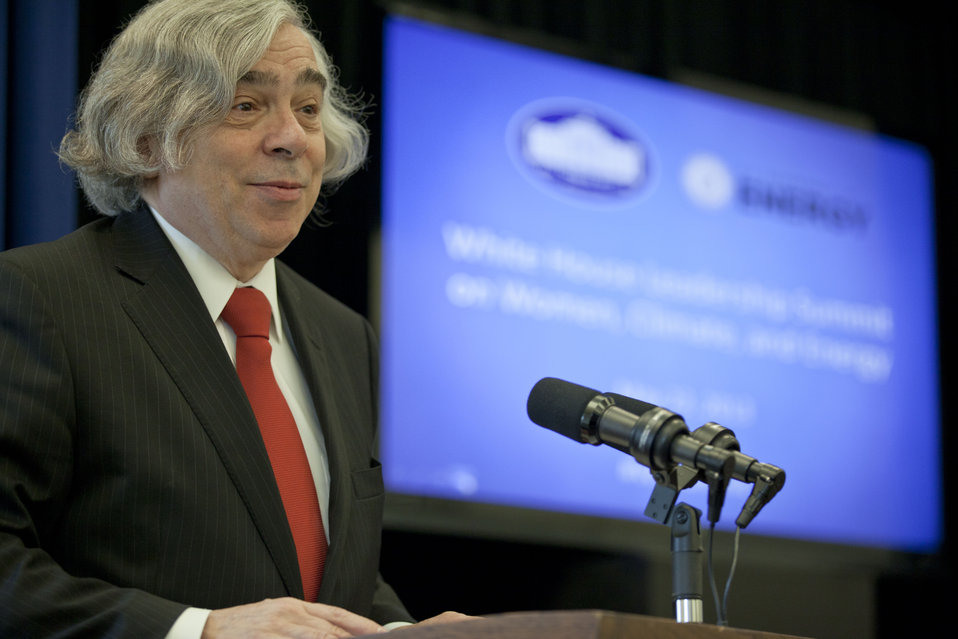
White House Leadership Summit on Women, Climate and Energy

Newly instated Secretary of Energy, Dr. Ernest Moniz, opened the morning's events with remarks on the importance of energy and climate solutions.